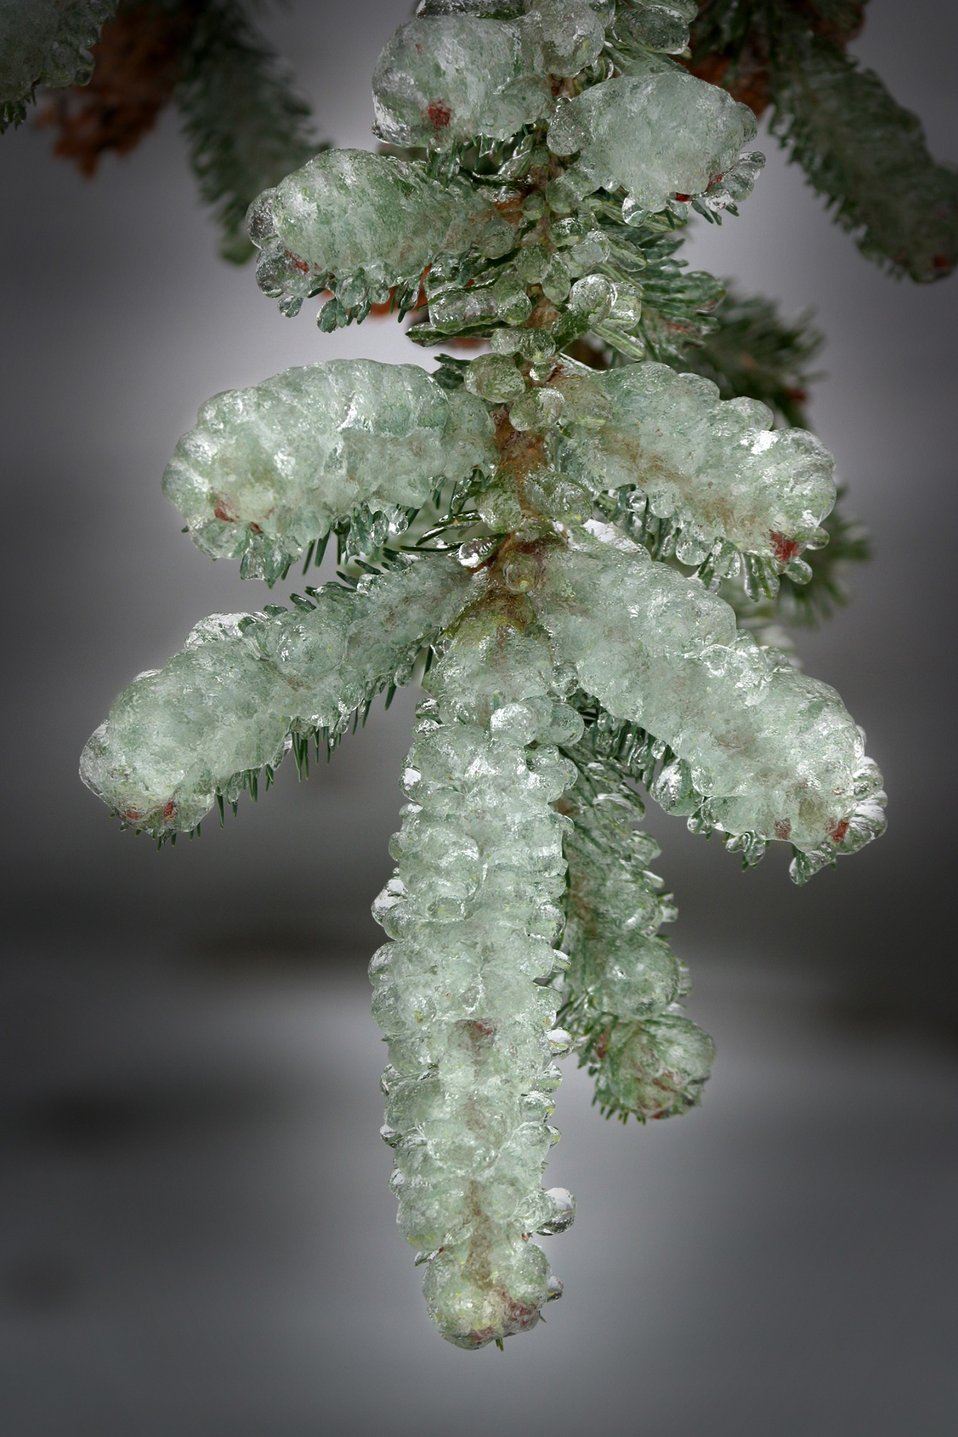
Snow and ice on Douglas Fir Bows and cones during the storm of January 2004.